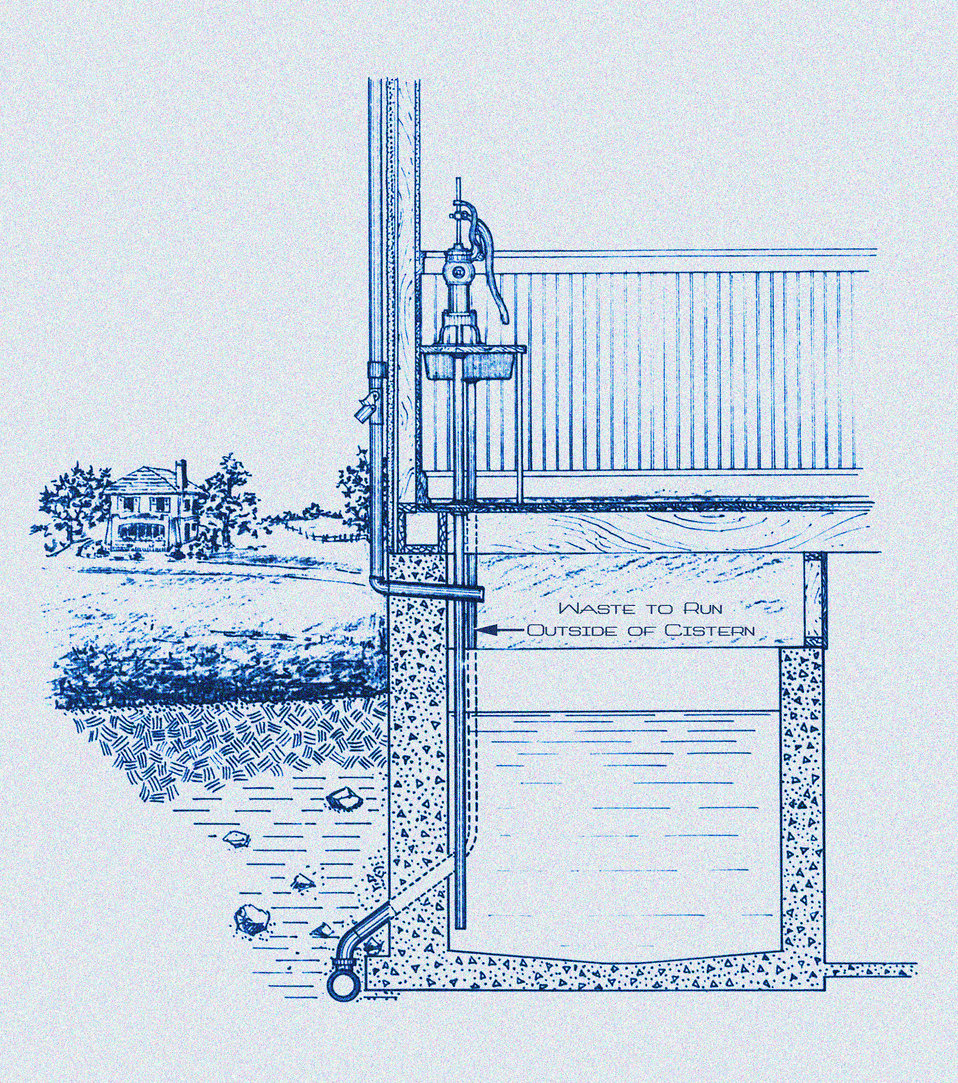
This historic diagram, which had been digitally enhanced and colorized, depicted a properly constructed cistern that had been located in the basement of a farm house. Published in 1915, this was one of a series of instructional drawings used by the Minnesota Board of Health to train its state public health workers. Note that the waste water emanating from the water pump on the porch was piped outside the confines of the cistern, thereby, avoiding potable water contamination.